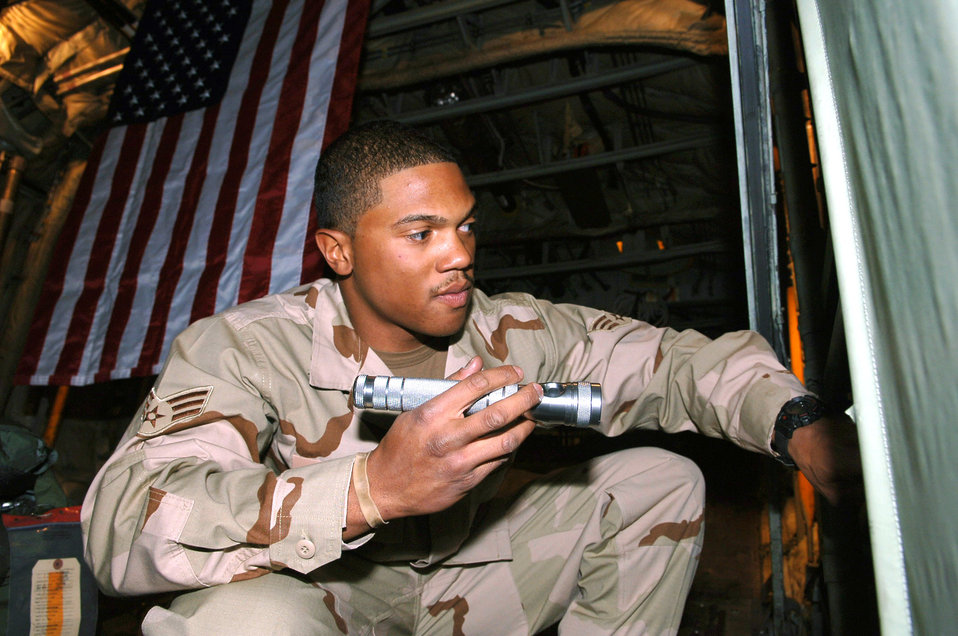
Looking for the

BAGRAM AIR BASE, Afghanistan (AFPN) -- Staff Sgt. Michael Smith inspects a Compass Call's of cargo compartment hydraulic reservoirs for leaks before a combat sortie. In the last 18 months, the 41st Expeditionary Electronic Combat Squadron flew more than 3,000 combat flying hours--the equivalent of covering the state of Texas with electronic signals 28 times. Sergeant Smith is deployed from Davis-Monthan Air Force Base, Ariz.